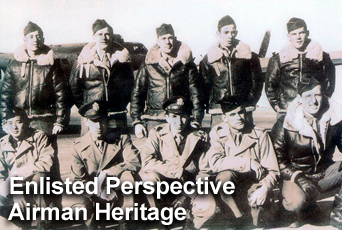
Enlisted Perspective: Airman Heritage

In the newest